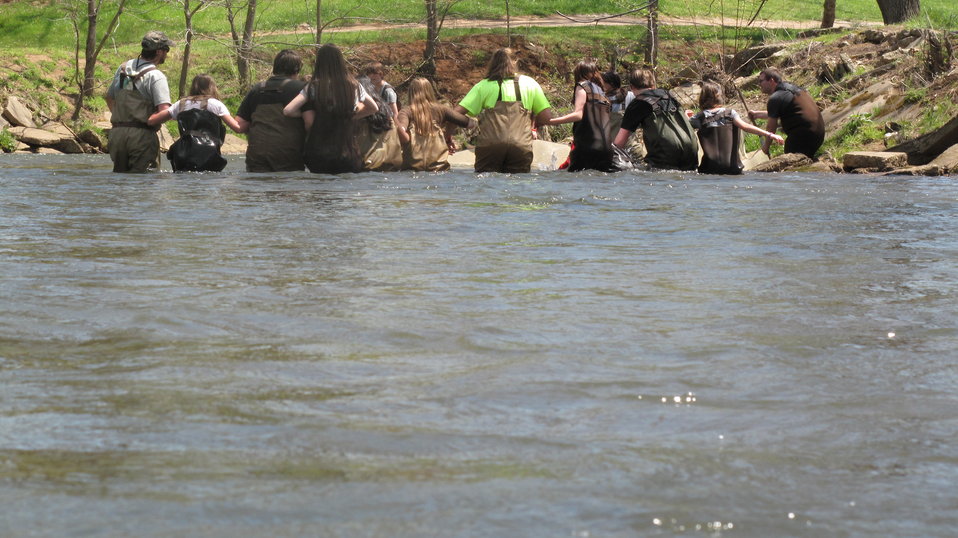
Students drive fish into a seine

Over the course of four days in late April 2014, every eighth grade student at North Carolina’s Macon Middle School, Highlands School, Nantahala School, and Trimont Christian Academy visited Cartoogechaye Park, in Macon County, to learn about rivers.

The students rotated through four stations:
1) water chemistry where they had the opportunity to help test water from Cartoogechaye Creek to gain an idea of the stream’s water quality;
2) aquatic insects, where students collected and identified animals like mayflies and caddisflies, learning how life in the river reflects the health of the river
3) fish, where they were able to collect and identify fish in the stream, and then
4) stream flow, where they measured and calculated the downstream movement of water, including the velocity of the water and the total volume of water being moved per second.

The event was organized by the University of Georgia's Coweeta Long-Term Ecological Research (LTER) Program, which is based at the USFS Coweeta Hydrologic Laboratory. (coweeta.uga.edu/), with sizable support from the Land Trust for the Little Tennessee. Other supporters include the U.S. Fish and Wildlife Service, N.C. Natural Heritage Program, and N.C. Division of Water Resources.